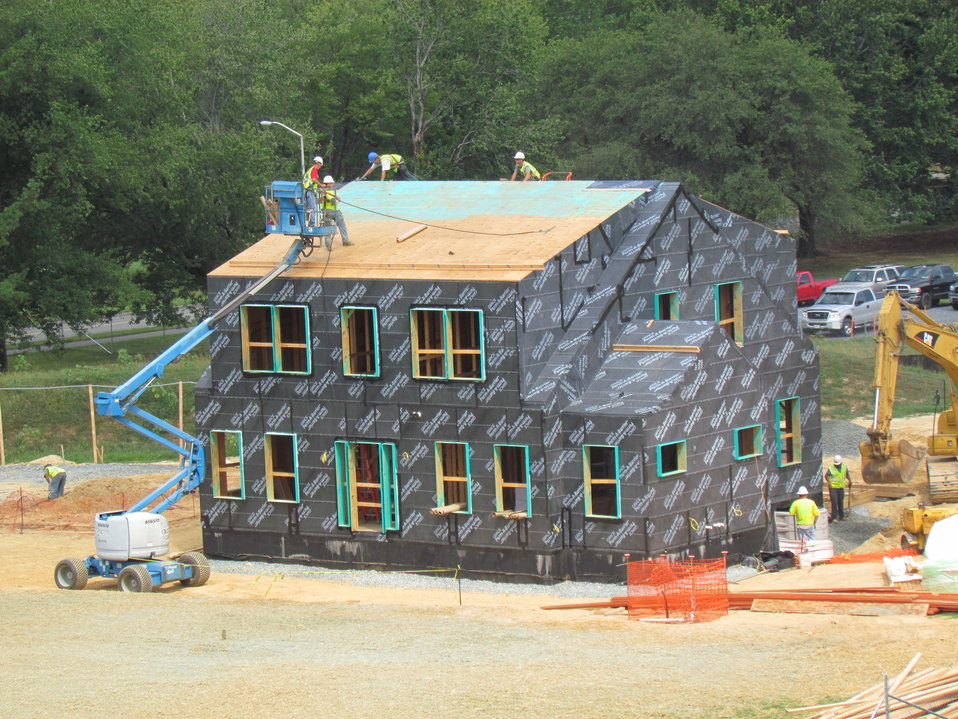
Net-Zero Energy Residential Test Facility - Photo showing preparation for installation of air/moisture barrier to main roof.